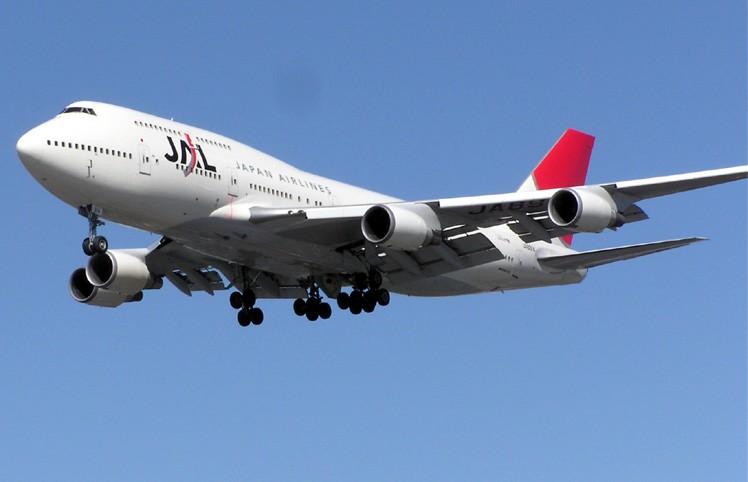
Jal.747.newcolours.arp.750pix